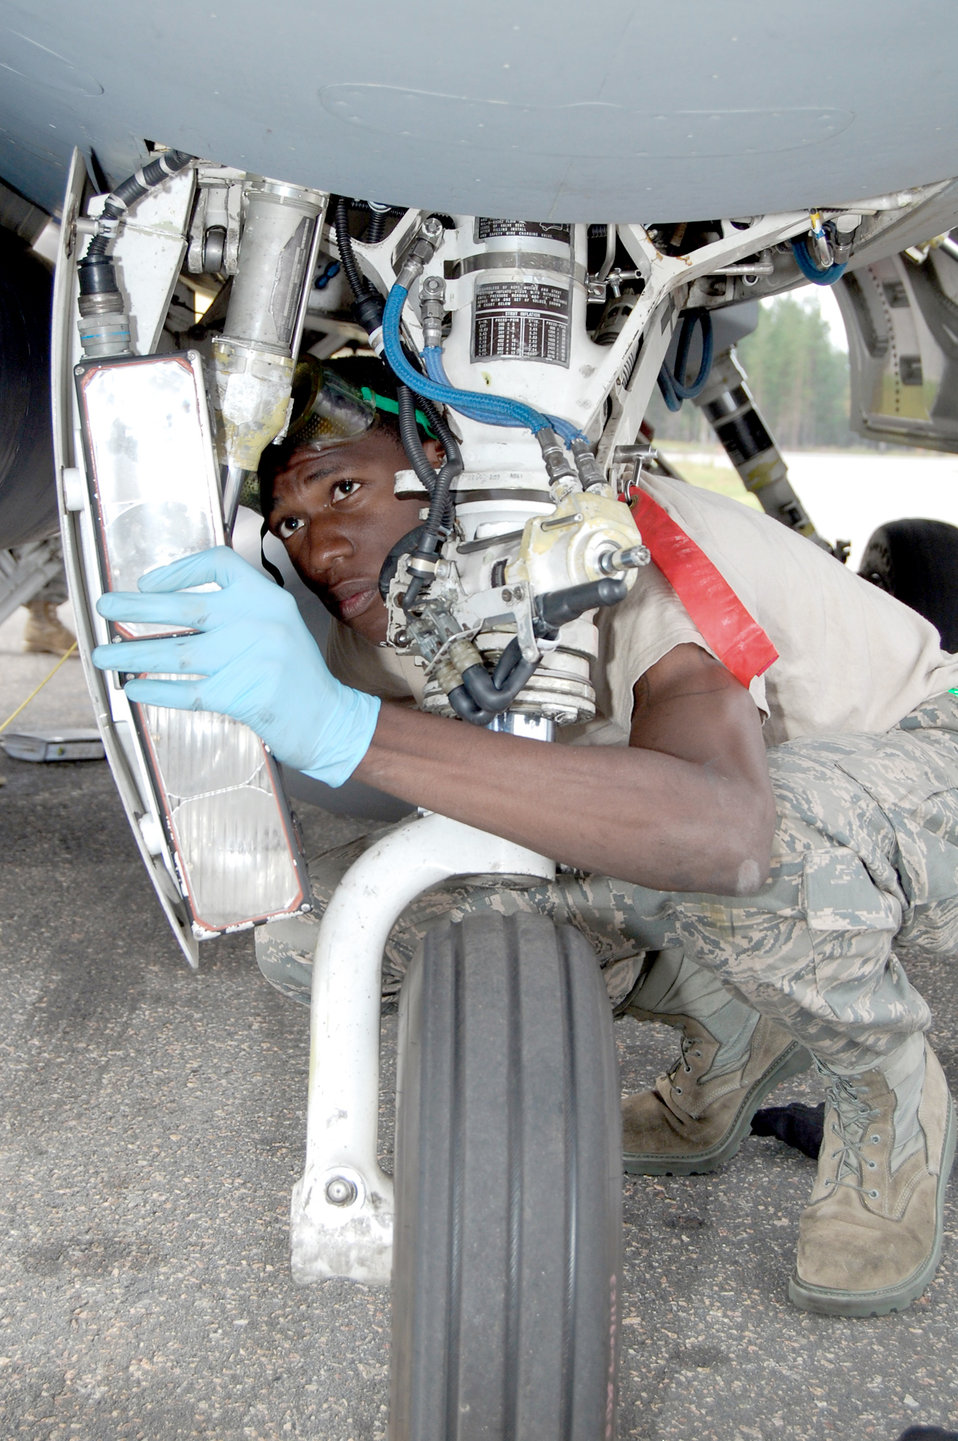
Fighting Falcons return from exercise in Sweden

Airman 1st Class Jordan Butler conducts a post-flight inspection on an F-16 Fighting Falcon Aug. 5, 2010, at Kallax Air Base, Sweden. Airman Butler is a 31st Aircraft Maintenance Squadron crew chief.